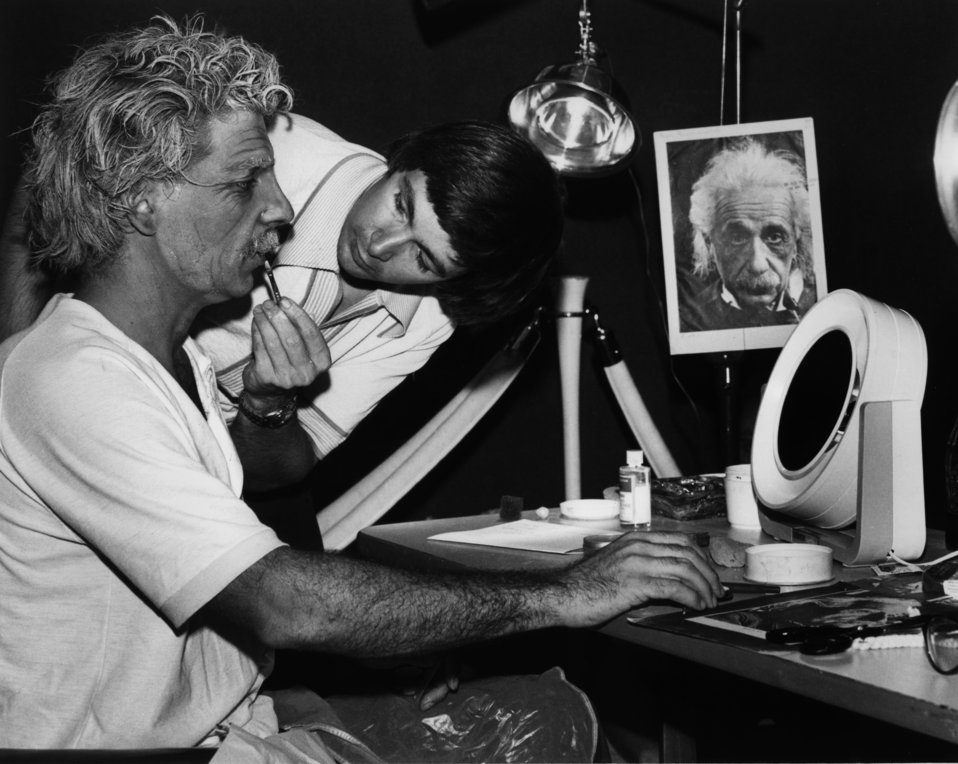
Einstein Actor Bill Landry AMSE Oak Ridge

77-385 DOE photo Frank Hoffman 9-11-1977 Oak Ridge Tennessee